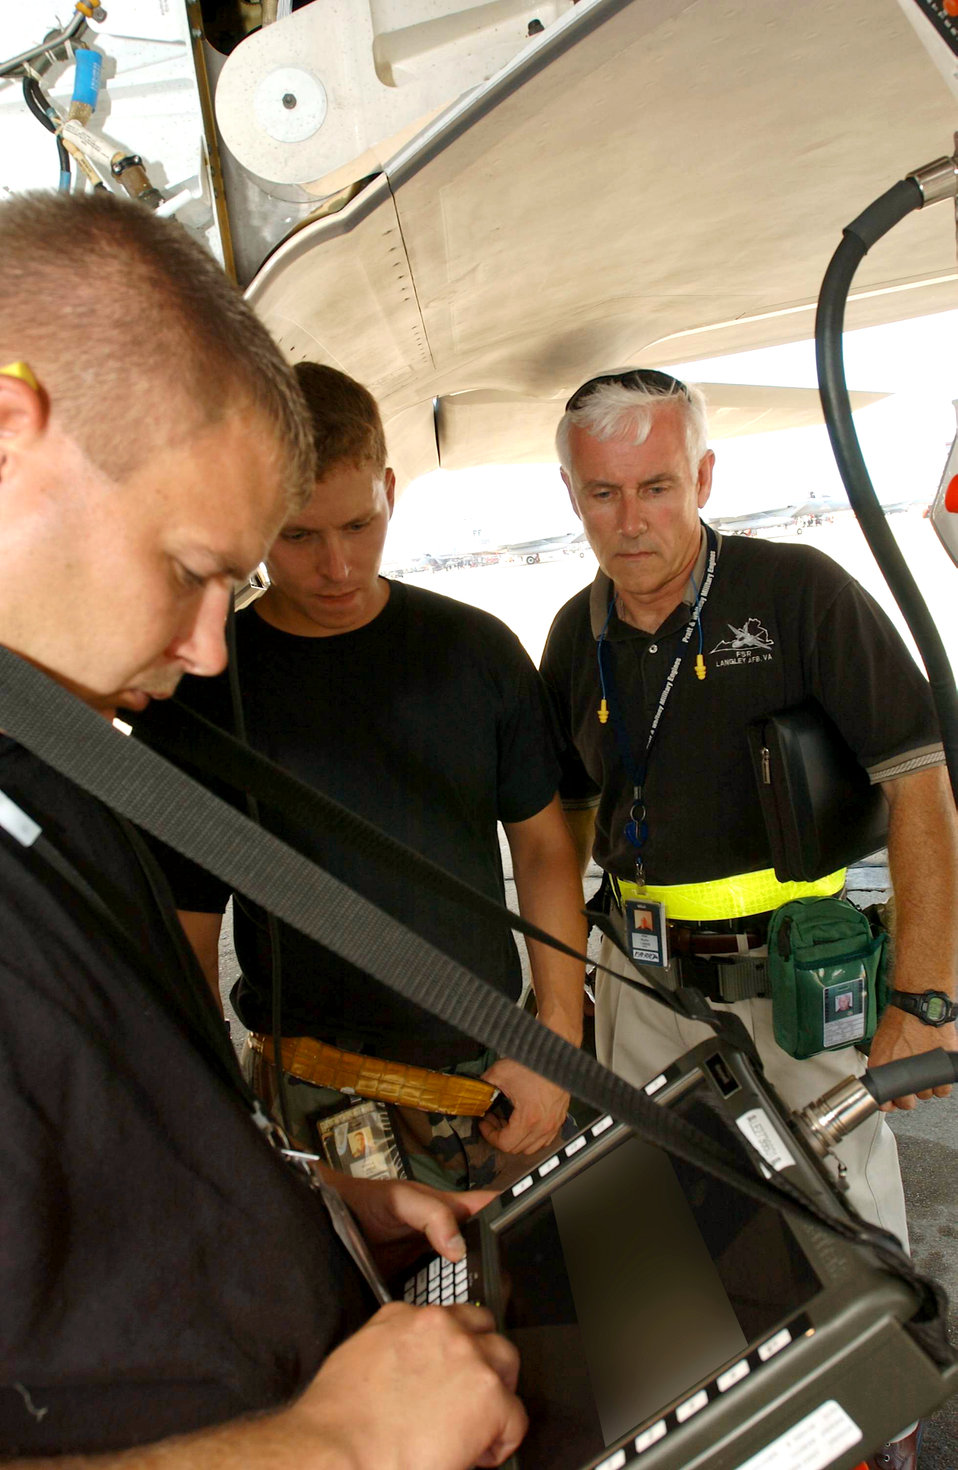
Raptor practice

LANGLEY AIR FORCE BASE, Va. -- (From left) Staff Sgts. Ryan Chatterson and John Wilcox, and Alan Myers conduct a post-flight inspection of an F/A-22 Raptor with after its return from a simulated combat sortie during an exercise here. The exercise evaluated the 1st Fighter Wing's ability to prepare and deploy people, equipment and support assets to a combat environment. Mr. Myers is a field service representative.